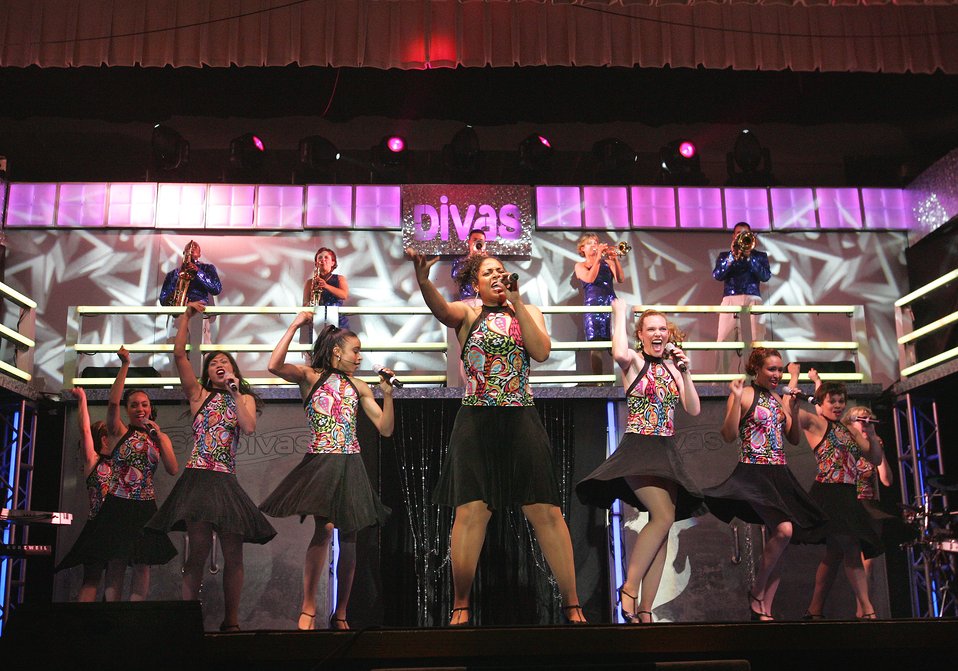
Tops in Blue 2005 gave their last performances of the year March 15 to 17, 2006, at the Bob Hope Theater at Lackland Air Force Base, Texas. Known as the Air Force's expeditionary entertainers, Tops In Blue travels wherever U.S. servicemembers are stationed.